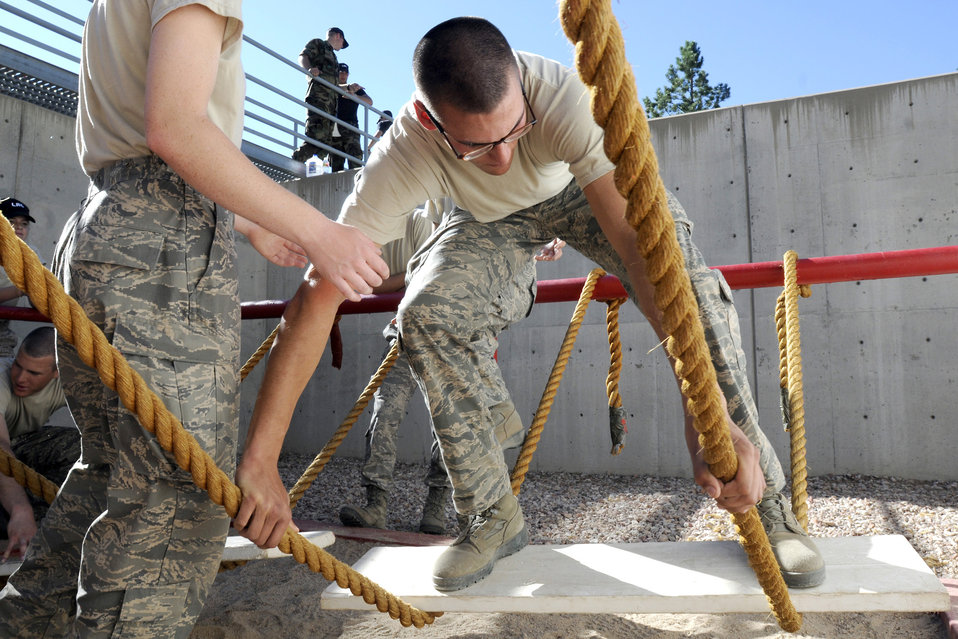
Cadets learn essential skills in Leadership Reaction Obstacle Course

Basic Cadet Grant Urbon works his way through an obstacle at the leadership reaction course at the U.S. Air Force Academy, Colo., July 16, 2010. The cadets learned essential problem solving and leadership techniques by working through 15 challenging obstacles.